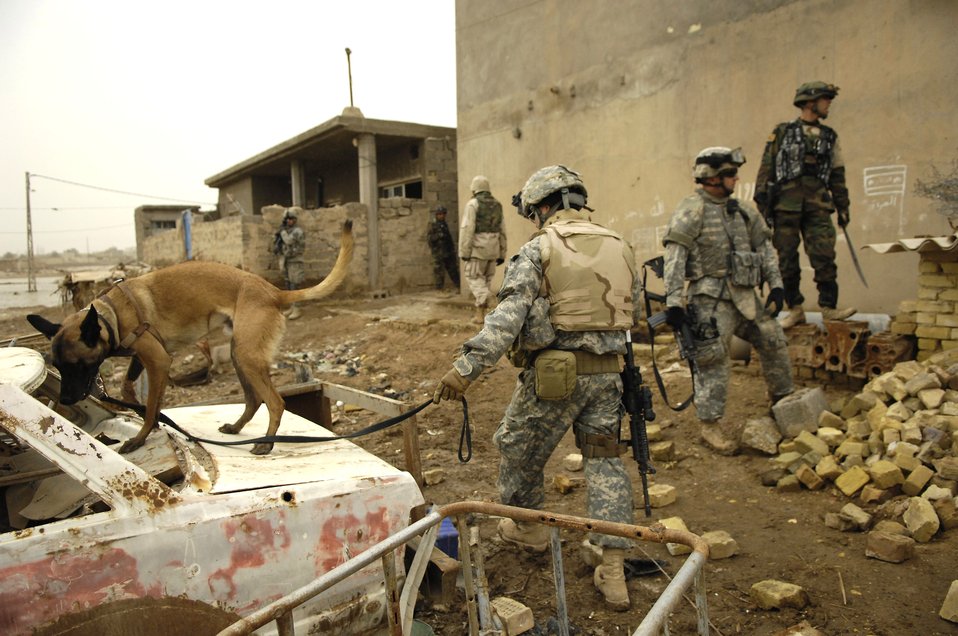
Airmen excel in nontraditional combat roles

Tech. Sgt. Harvey Holt and his military working dog accompany U.S. and Iraqi soldiers Feb. 6 during a patrol in Kahn Bani Sahd, Iraq. Airmen continue to excel in nontraditional combat roles in support of combatant commanders' requirements where Airmen are deployed to assist Soldiers. Sergeant Holt is assigned to the 732nd Expeditionary Security Forces Squadron.